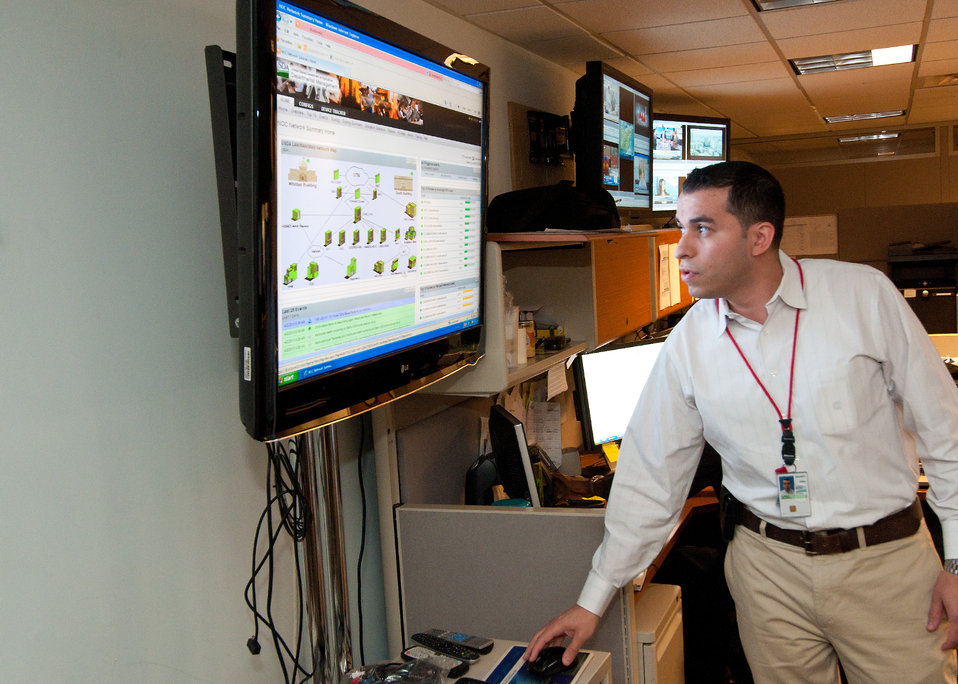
U. S. Department of Agriculture (USDA) Network Operations Center employee Nelson Flores explains the network architecture to students from Edison Academy in Fairfax, VA USDA Information Technology (IT) Job Shadow Day held by the USDA Office of the Chief Information Officer (OCIO) to introduce local high school students to careers in information technology in Washington, D.C. on Tuesday, Apr. 2, 2013.